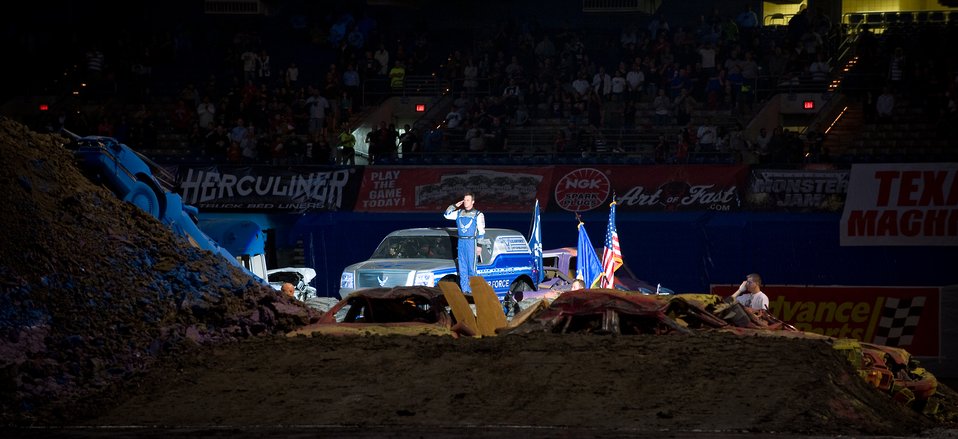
AF flies high at Monster Jam

Damon Bradshaw stands on a wheel of the Air Force Afterburner monster truck to salute while the national anthem is sung during the opening of the 2009 Monster Jam Jan. 11 in San Antonio. Surrounding him were the mounds of dirt and crushed cars that made up the obstacles on the course.